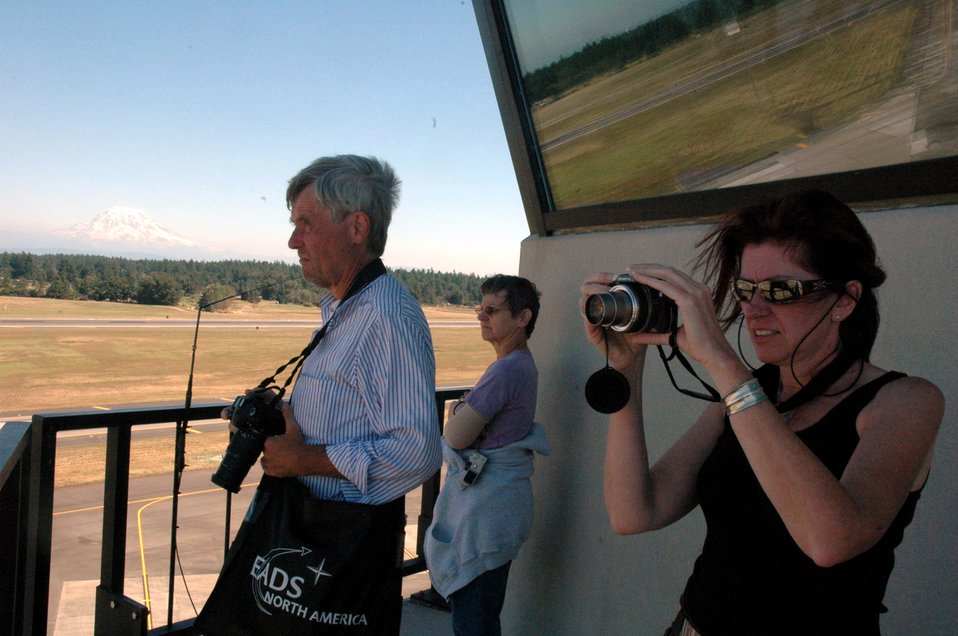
Heritage to Horizons: Air Force documents history through art

Artists James Consor, Priscilla Messner-Patterson and Christine Murphy take reference photos July 25 during a visit to McChord Air Force Base, Wash., for the Air Mobility Rodeo 2007. The artists are with the Air Force Art Program and will use the photos to document Air Force activities through paintings and other media.